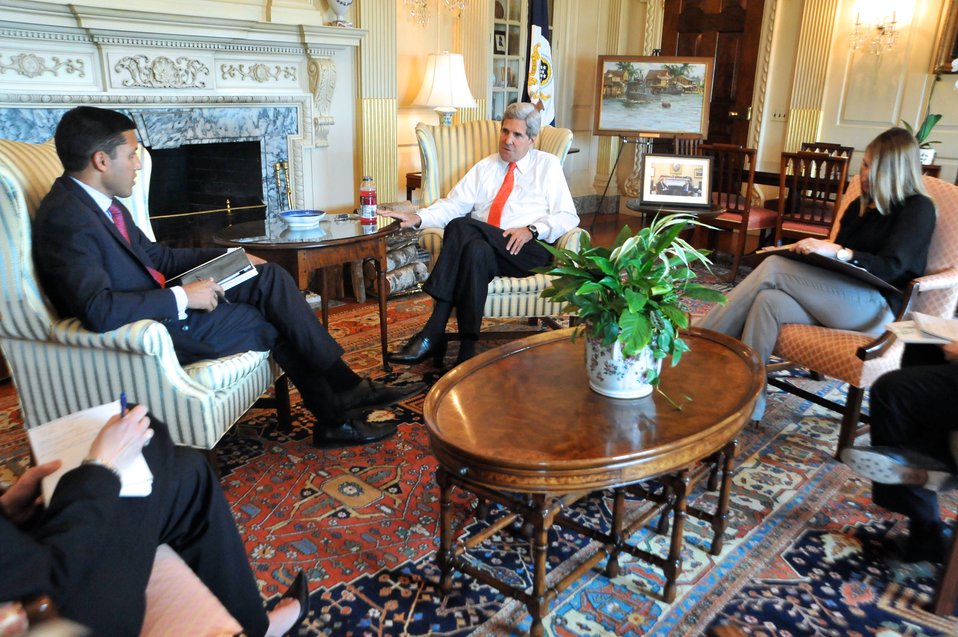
Secretary Kerry, Deputy Secretary Higginbottom, and Administrator Shah Discuss the Secretary's Upcoming Trip to Africa

U.S. Secretary of State John Kerry, Deputy Secretary for Management and Resources Heather Higginbottom, and USAID Administrator Rajiv Shah discuss the Secretary’s upcoming trip to Africa during a meeting at the U.S. Department of State in Washington, D.C., on April 25, 2014.